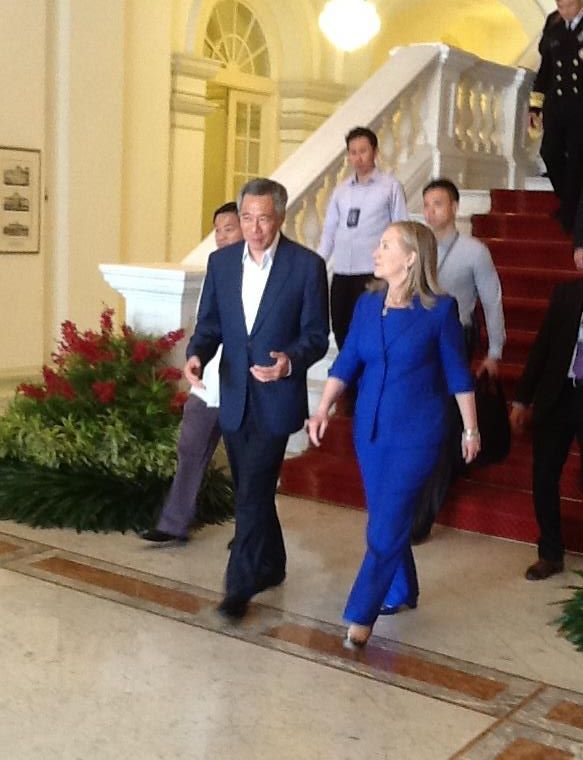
Secretary Clinton Meets With Singaporean Prime Minister Lee Hsien Loong

U.S. Secretary of State Hillary Rodham Clinton meets with Singaporean Prime Minister Lee Hsien Loong at Istana in Singapore, November 17, 2012.